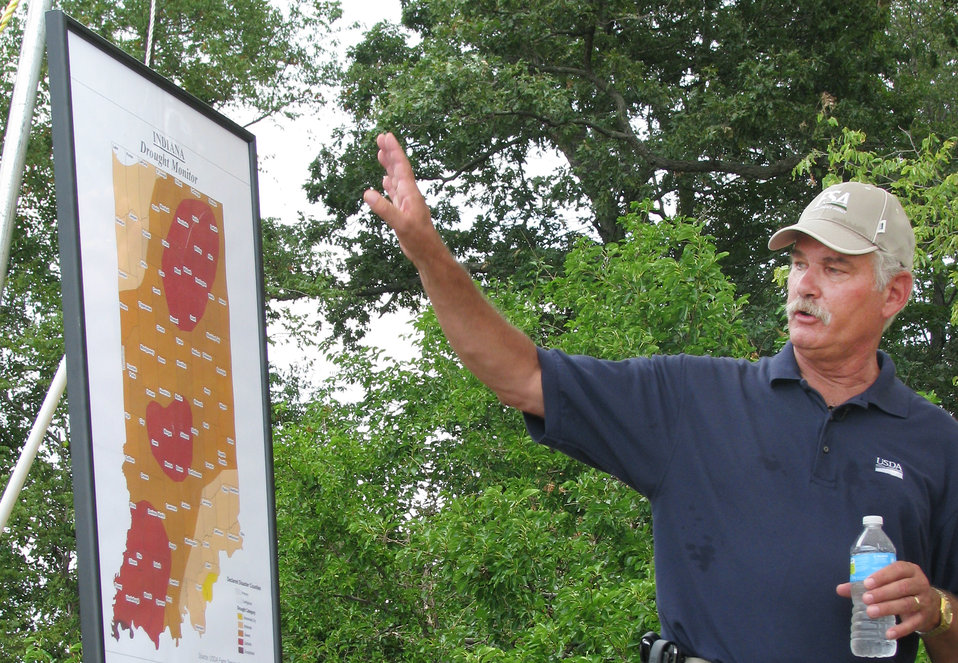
Agriculture Under Secretary for Farm and Foreign Agriculture Service (FFAS) Michael Scuse shows farmers the drought map representing the drought conditions being felt across the country in Idaville, White County, IN on Thursday, July 19, 2012. Agriculture Secretary Vilsack has instructed Agriculture subcabinet leaders to travel to affected drought areas to augment ongoing assistance from state-level U.S. Department of Agriculture (USDA) staff and provide guidance on USDA’s new, streamlined disaster process. The U.S. Drought Monitor currently reports that 61 percent of the continental United States is in a moderate to exceptional drought.